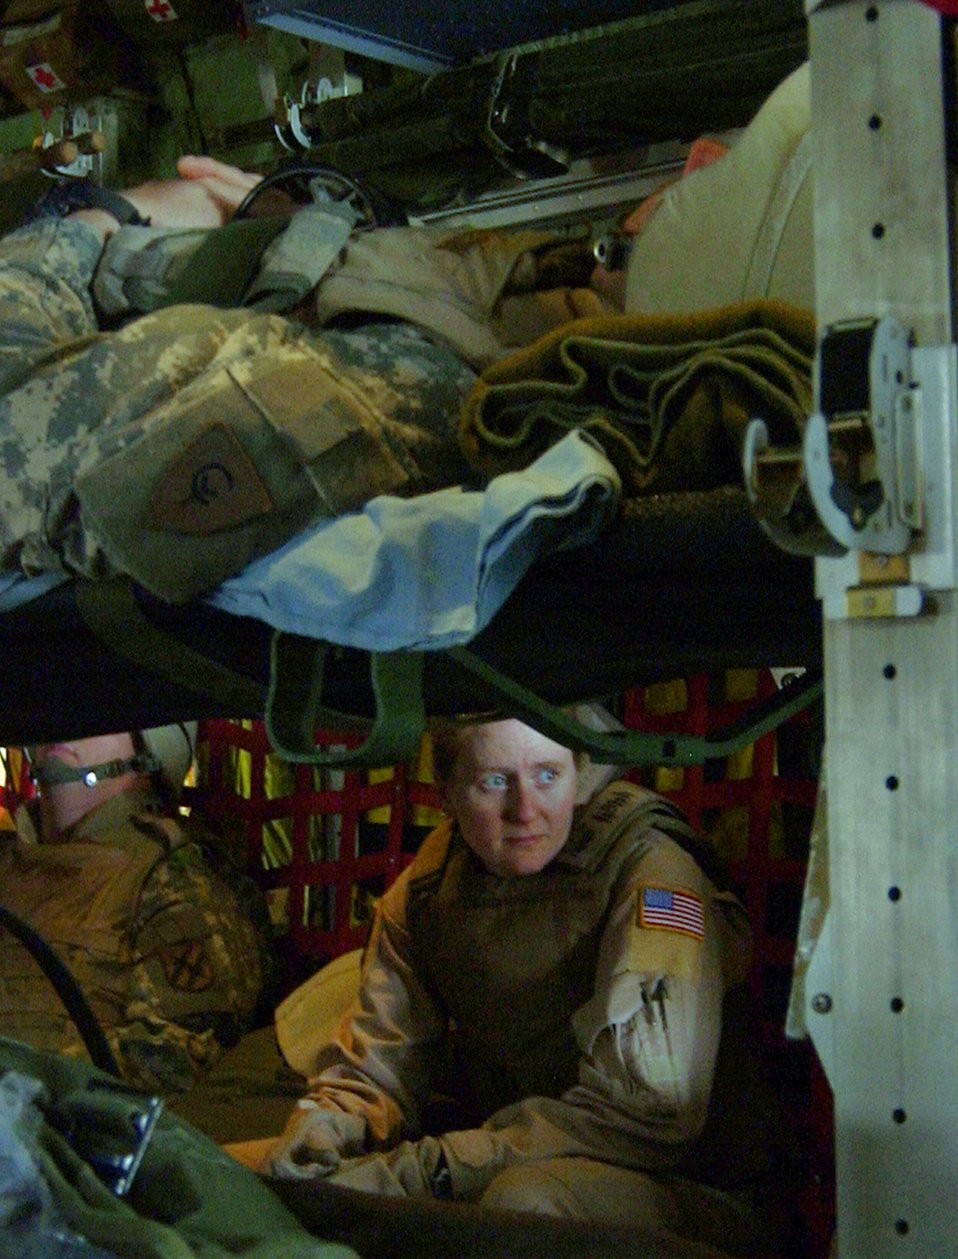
On a mission of mercy

MOSUL, Iraq (AFPN) -- After loading patients, Tech. Sgt. Amy Romanas takes a brief break.